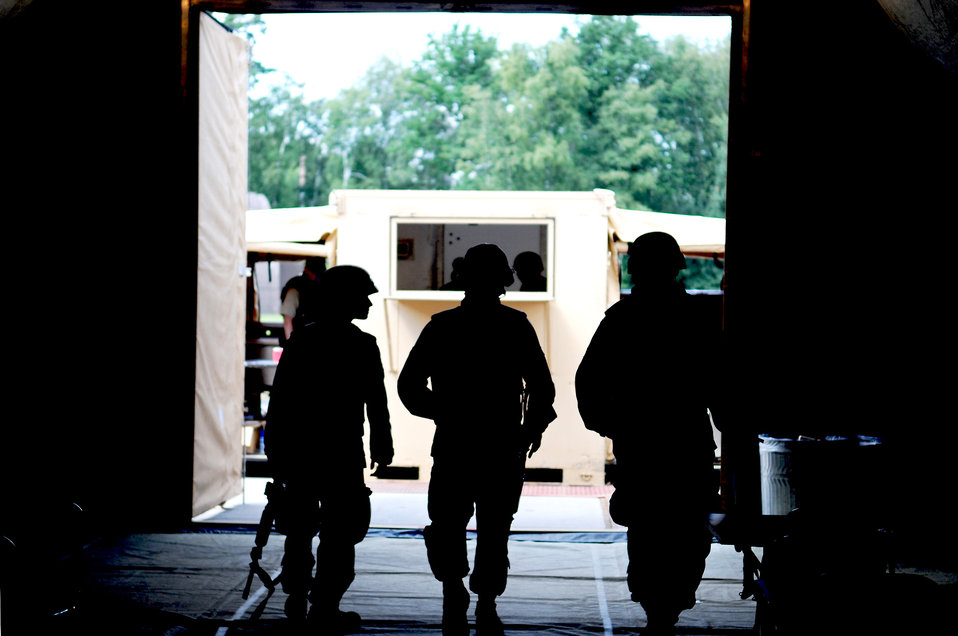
Silver Flag Exercise

Airmen leave the dining facility tent after eating a meal Aug. 1 during the Silver Flag exercise at Ramstein Air Base, Germany. Silver Flag gives participants the basic contingency skills to set up a bed-down operation anywhere in the world.